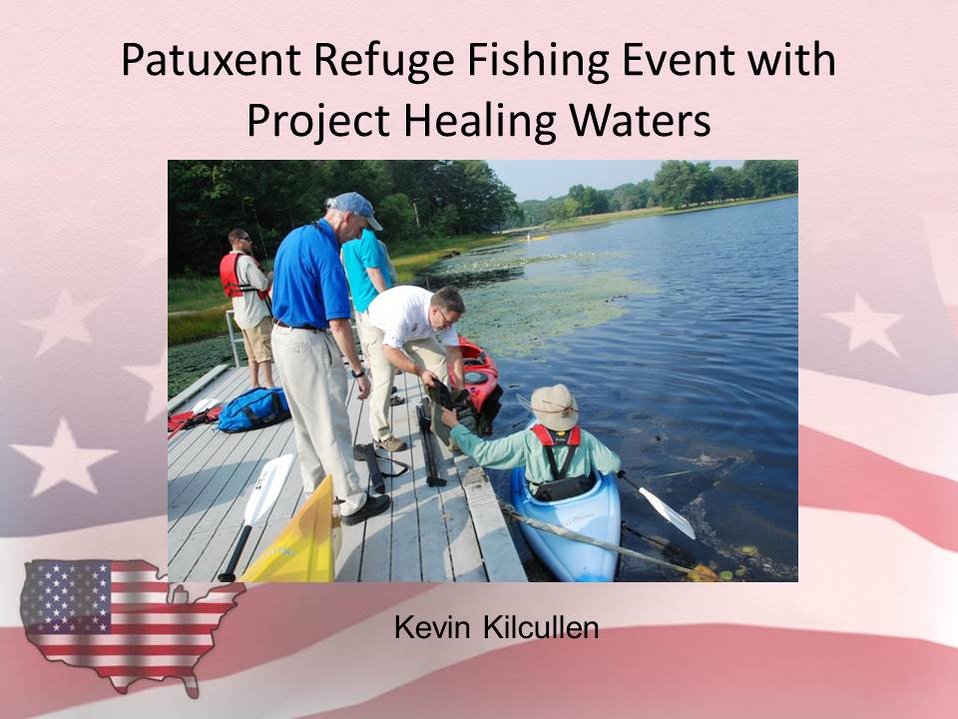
Patuxent Refuge Fishing Event with Project Healing Waters